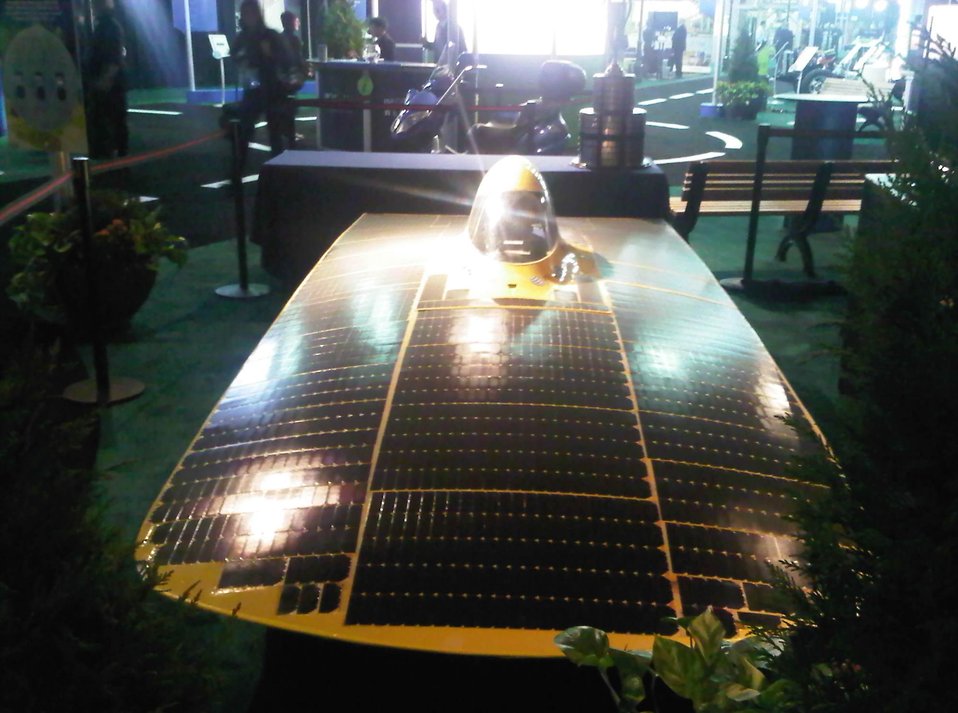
The 2011 Detroit Auto Show